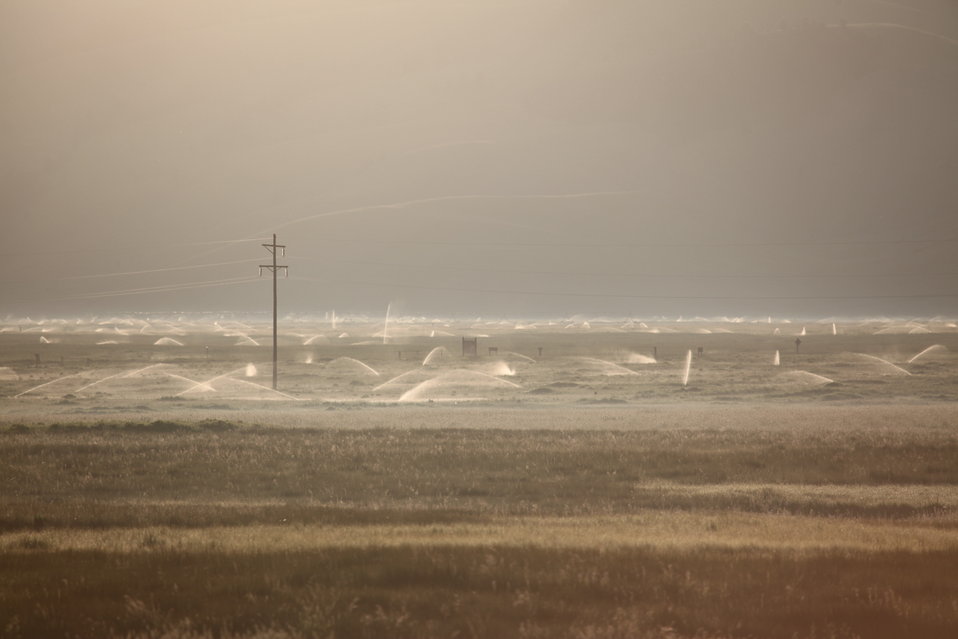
Irrigation Near the Chambers and Poverty Flats Management Areas

Each fall, the refuge's staff biologist calculates the amount of forage produced during that year's growing season. Higher forage production can delay the feeding start date, but the number of elk and bison, the duration of time that the animals spend on the refuge, and environmental conditons are other important factors.